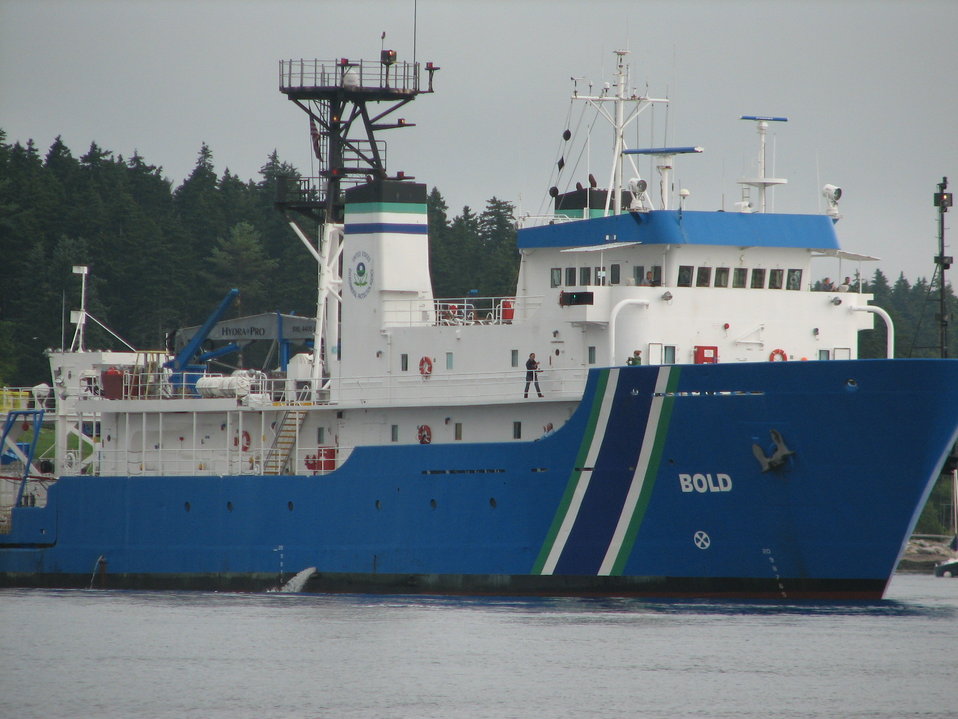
August 2009, Bold takes a quick spin by Fort Popham, Maine

A certain passenger's parents happened to find out the Bold was taking samples by the mouth of the Kennebec River 10 minutes from their house. They, along with a few other morning beachgoers caught a pretty great glimpse of the ship as the fog lifted!